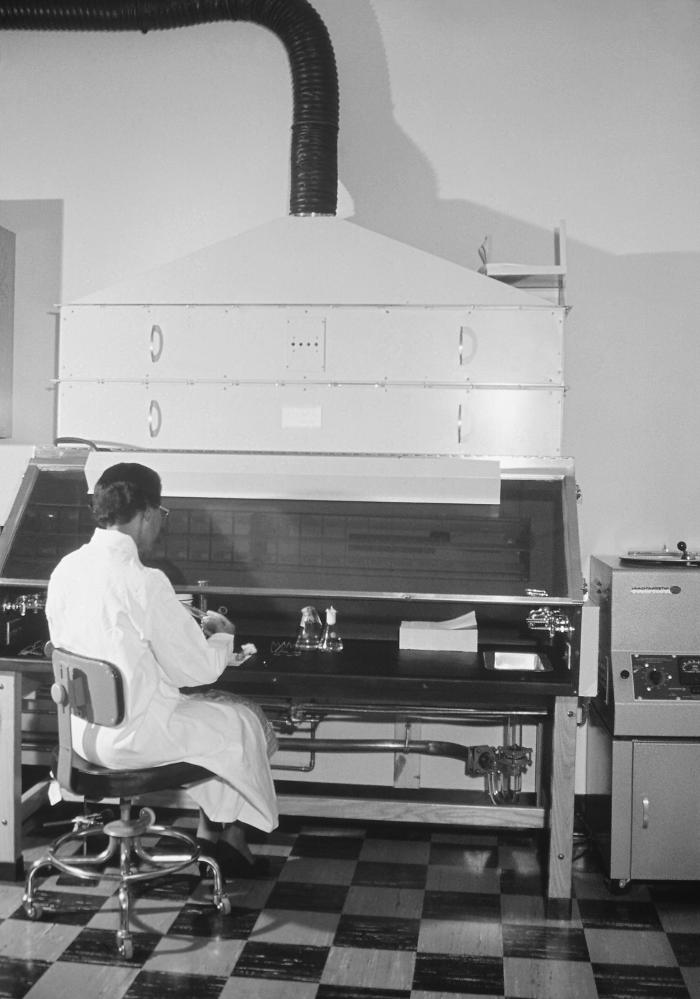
This 1960 historic image depicted a laboratory technician as she was seated at a biological safety cabinet equipped with a vented hood. The negative pressure within the hooded space pulled air into the hood, thereby, keeping contaminants from escaping out into the laboratory environment. See PHIL 12011 for a color version of this image.